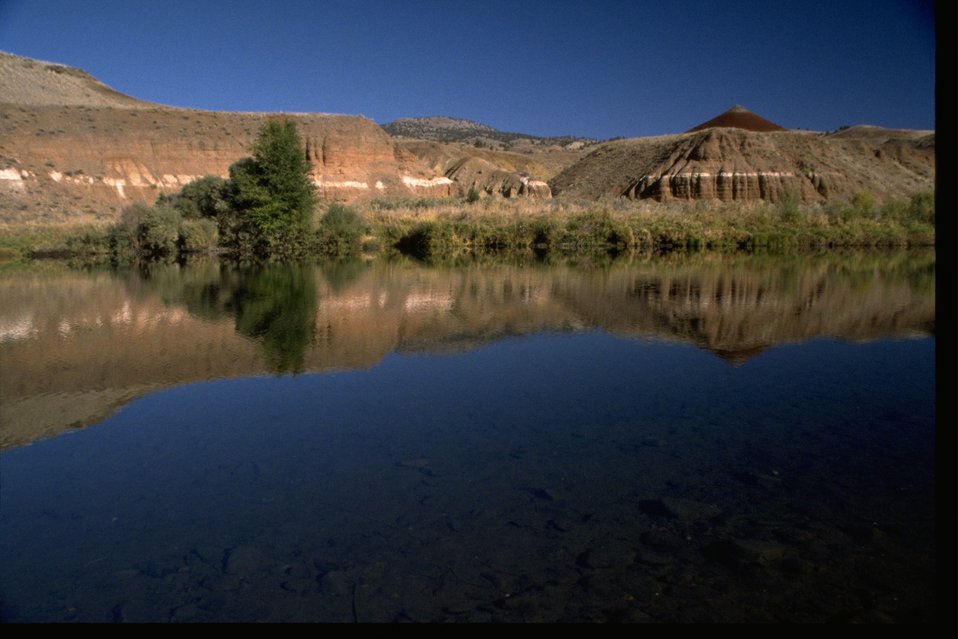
Riparian vegetation along the bank of the John Day River, near Bridge Creek.